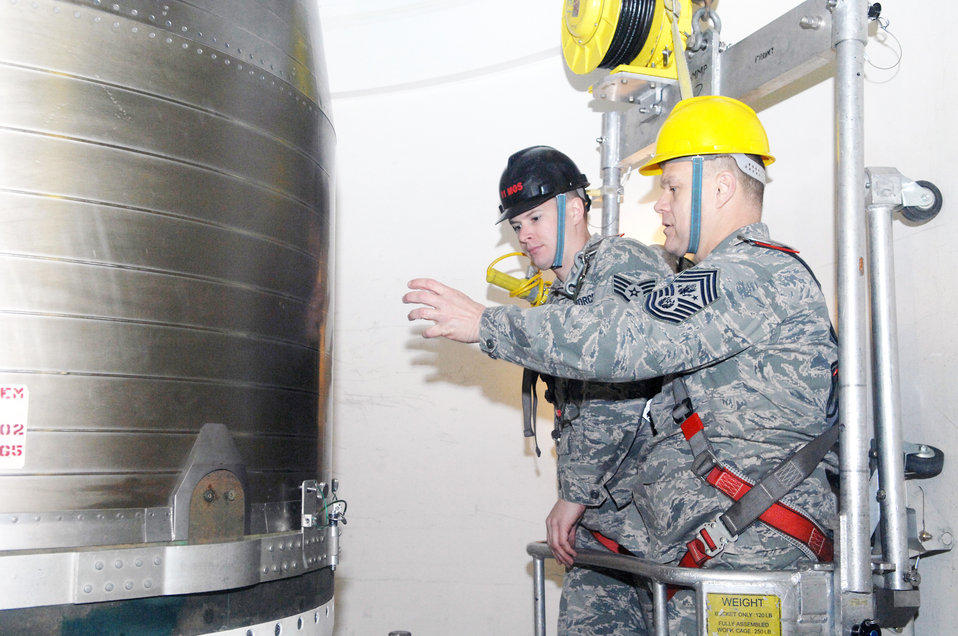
CMSAF Christmas visit

Chief Master Sgt. of the Air Force James Roy (front) is given a cage ride in the missile maintenance trainer Dec. 24, 2009, by Staff Sgt. Chris Hawkins, a 91st Missile Maintenance Squadron missile maintenance instructor at Minot Air Force Base, N.D. Chief Roy spent the Christmas holiday there and used the opportunity to meet Airmen from both the 5th Bomb Wing and the 91st Missile Wing and tell them their work in the nuclear enterprise is critical and that Air Force leaders are committed to their development.